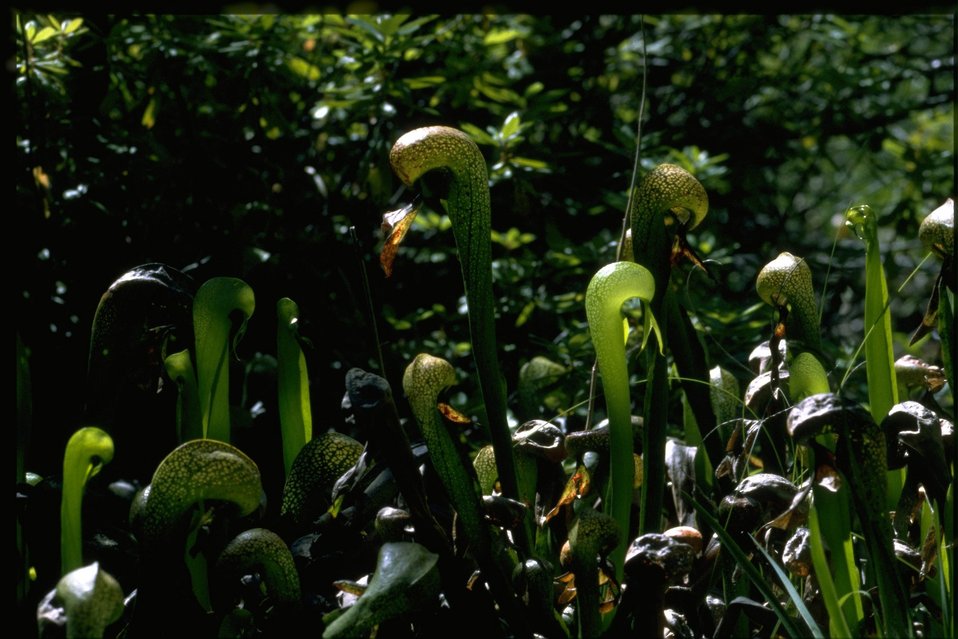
Medium shot of Cobra Lily, Darlingtonia californica.